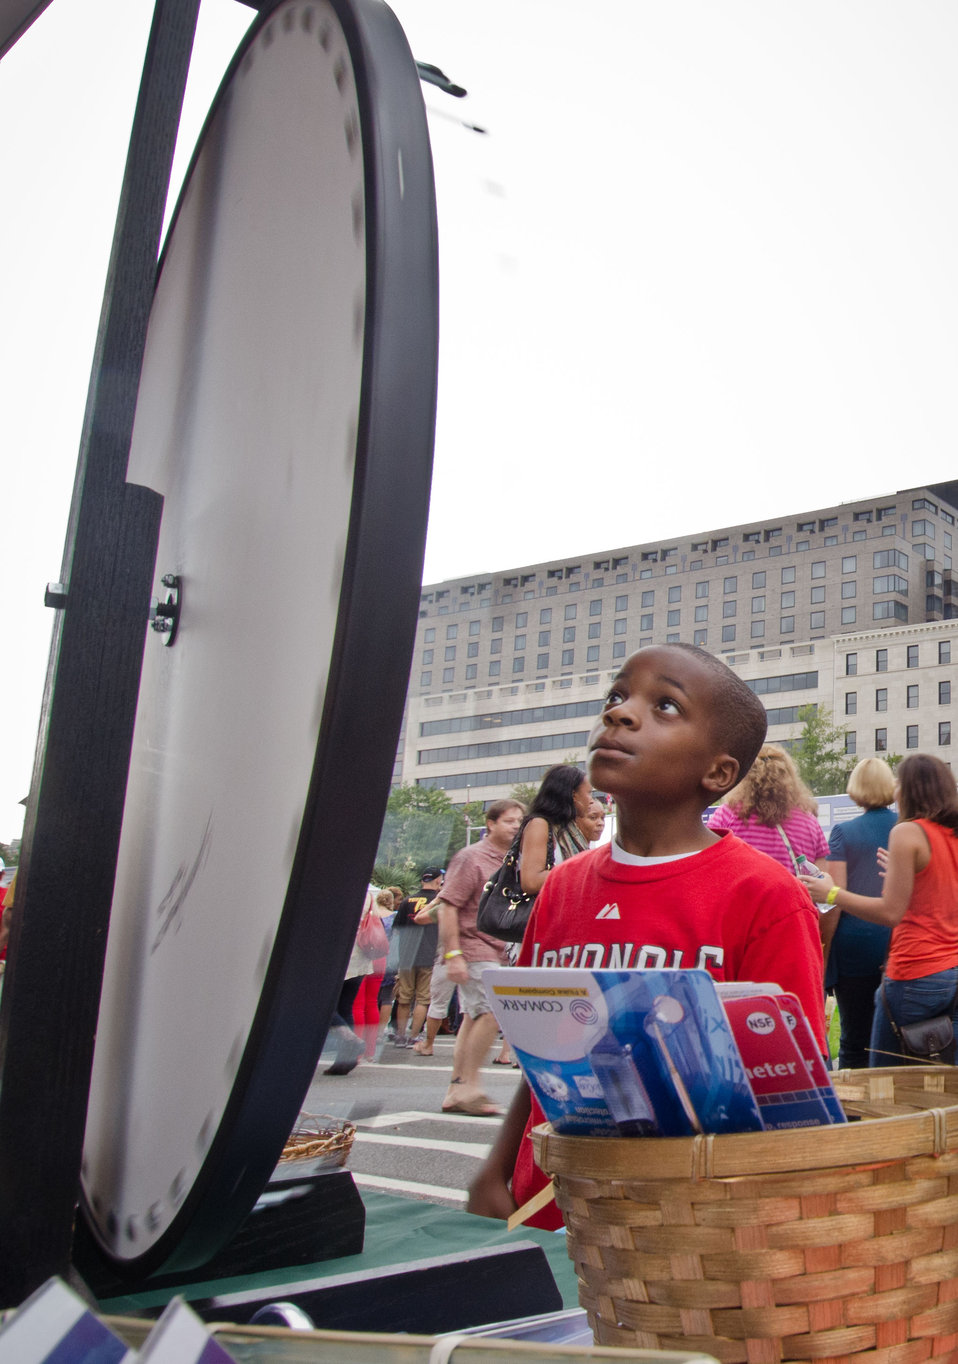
This young visitor spun a jackpot question and answered it correctly, allowing him to choose a digital thermometer for his dad to check the temperature of cooked meat; outside Agriculture’s mobile Discovery Zone at the Taste of DC event, are information materials that answer many every-day questions about maintaining safe food practices at home, additionally, games offered a fun way for children and parents to test their knowledge related to the four main principals of food safety – clean, separate, cook and chill. For more information see www.fsis.usda.gov/foodsafetymobile/
Taste of DC event highlights more than 70 eateries, 30 specialty beer providers, the United Service Organization (USO) Metropolitan Washington, and live bands who anticipate more than 500,000 people to attend over the course of the three-day event, which extends from the White House to the Capitol, along Pennsylvania Ave., in Washington D.C. on October 6, 2012. Agriculture Food Safety and Inspection Service specialists present talks and cooking demonstrations.